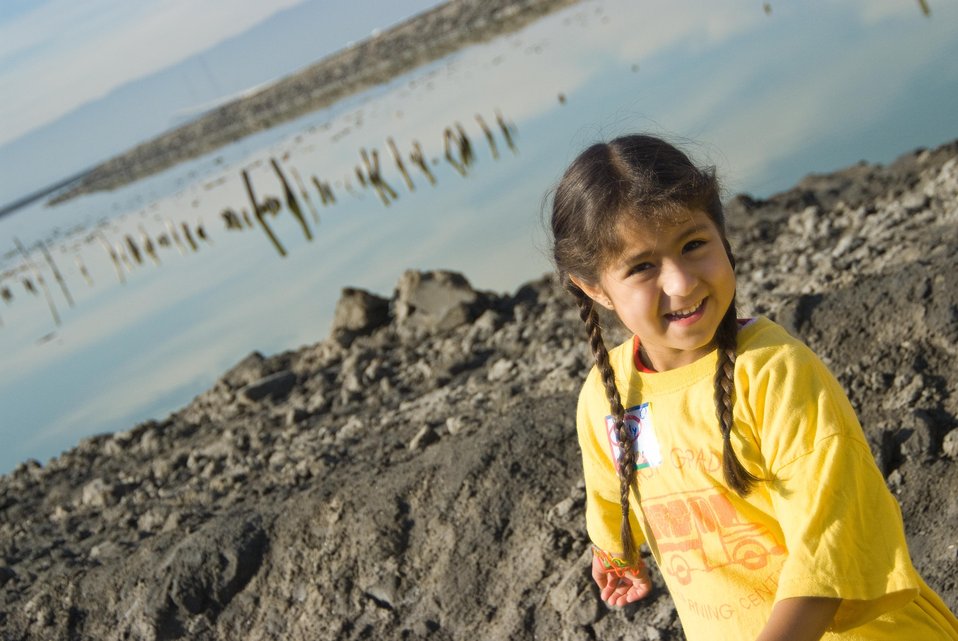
Girl at Don Edwards San Francisco Bay National Wildlife Refuge

Don Edwards San Francisco Bay National Wildlife Refuge hosts hundreds of school groups each year.